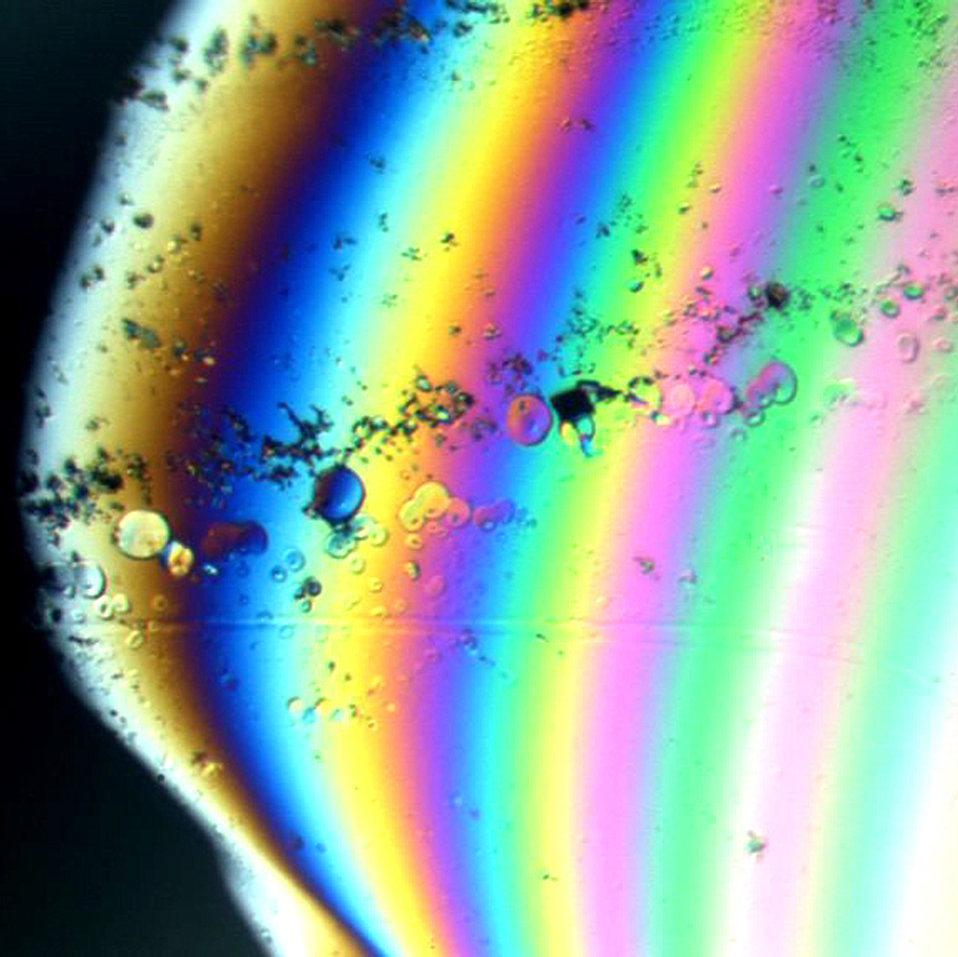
Rainbow Film

A rainbow of colors indicates the thickness of a clear, organic film used to mount microscopic particles. The deep blue and brown on the left of this optical micrograph show that the film is less than a micrometer thick, the right thickness for embedding single particles for microstructural analysis. In an AML ultraclean room, NIST chemists mount and analyze individual particles for forensic, advanced materials, and other researchers.